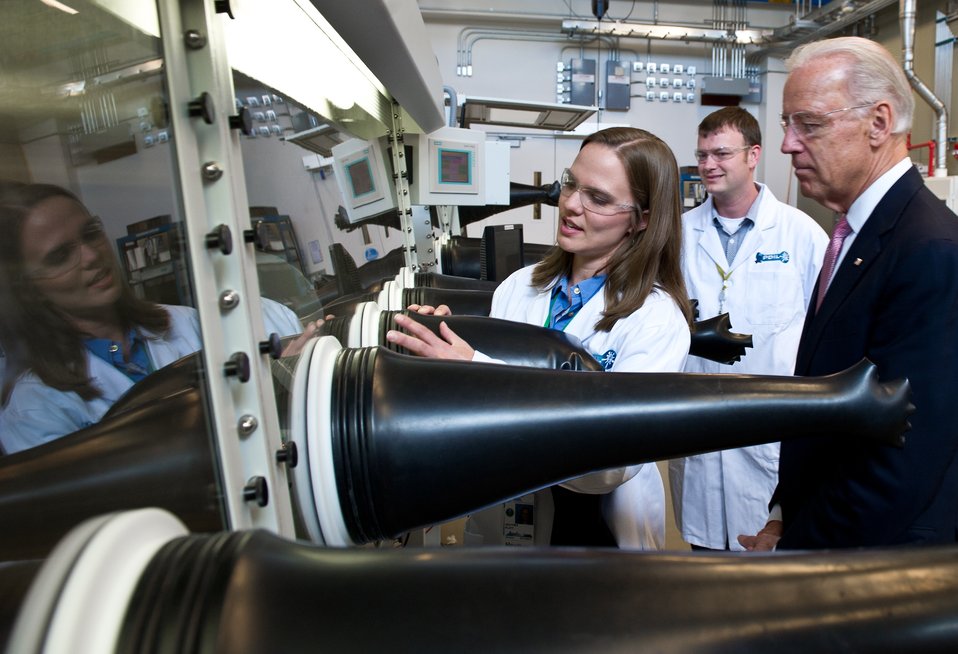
Vice President Biden

Vice President Joe Biden talks with staff at the National Renewable Energy Lab's Process Development and Integration Laboratory (PDIL). The PDIL brings together technical experts from NREL, the solar industry, and universities for collaborative research.